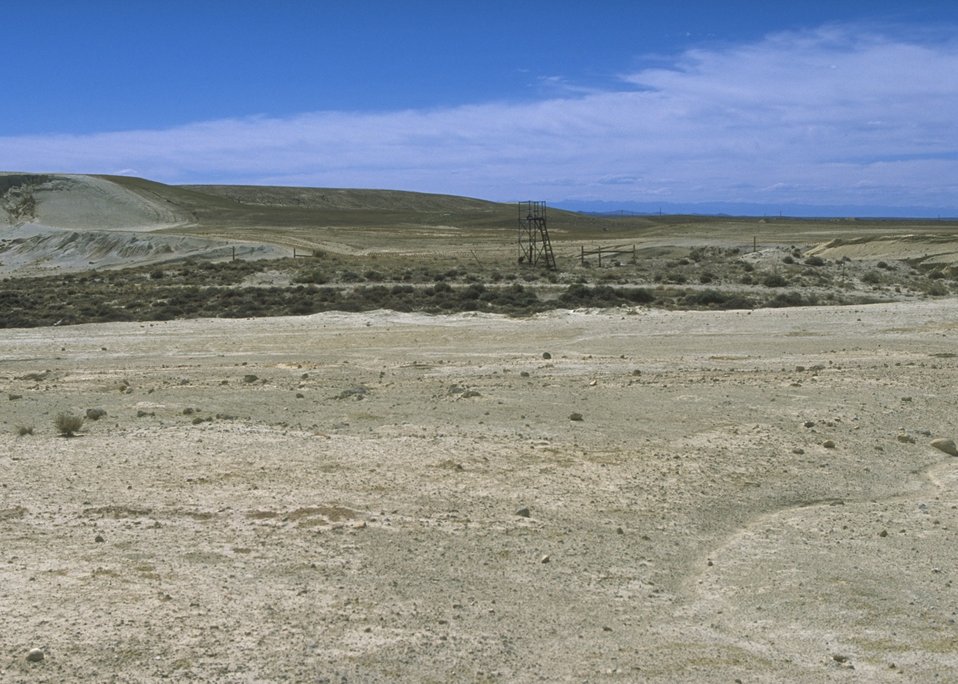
Gas Hill Abandoned Mine Lands in various stages of rehabilitation, Lander Field Office.